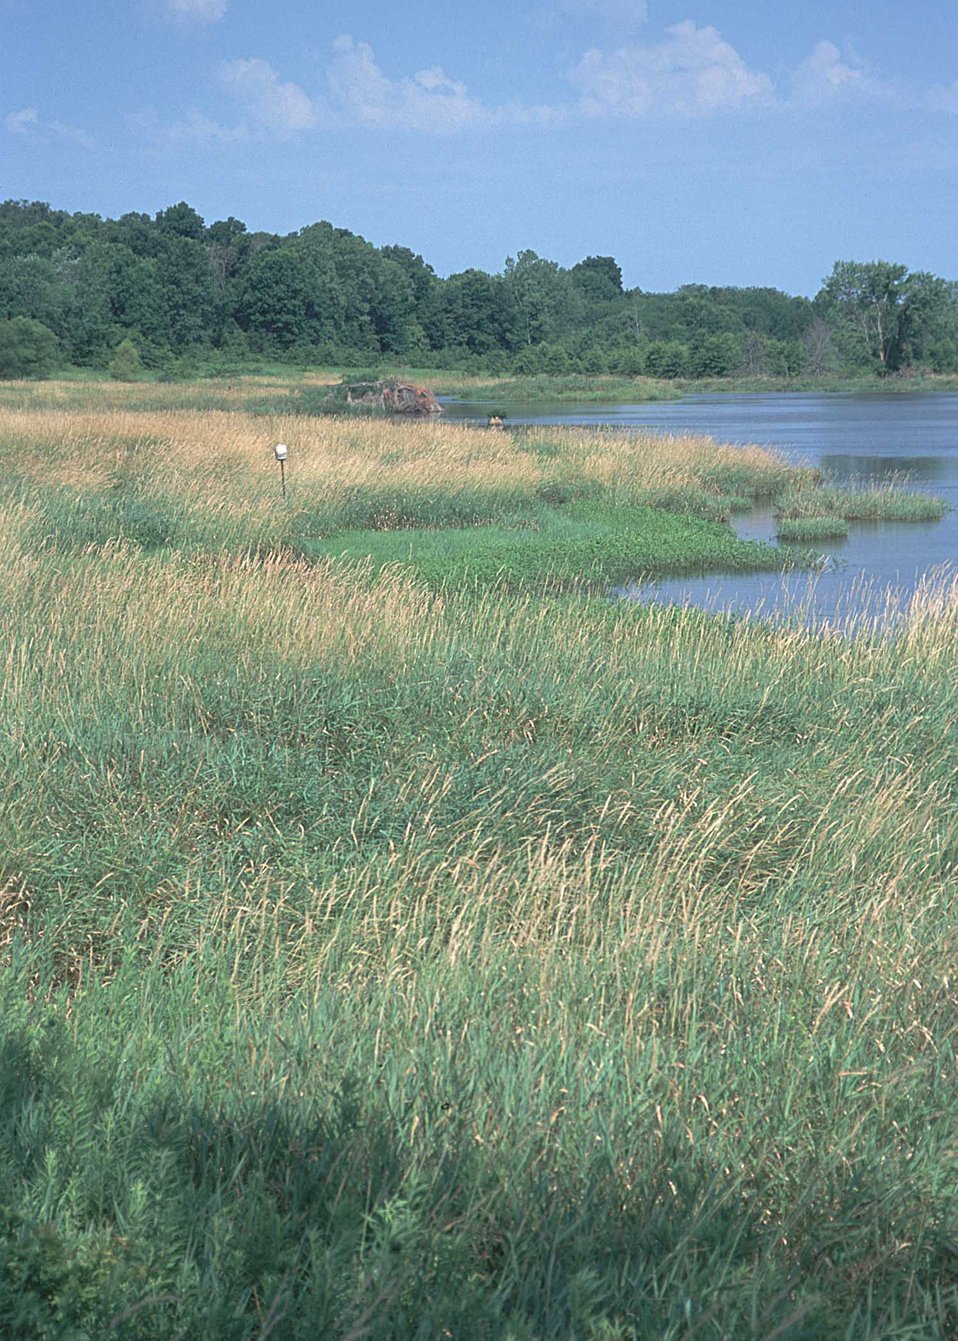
Grasses that are part of a restored wetland in Van Buren County, Iowa offer wildlife habitat.